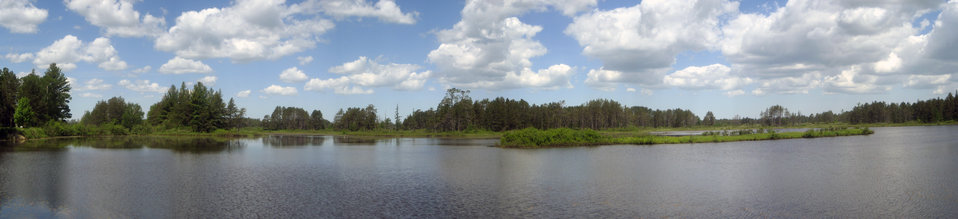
Panorama of Seney National Wildlife Refuge

Seney National Wildlife Refuge.